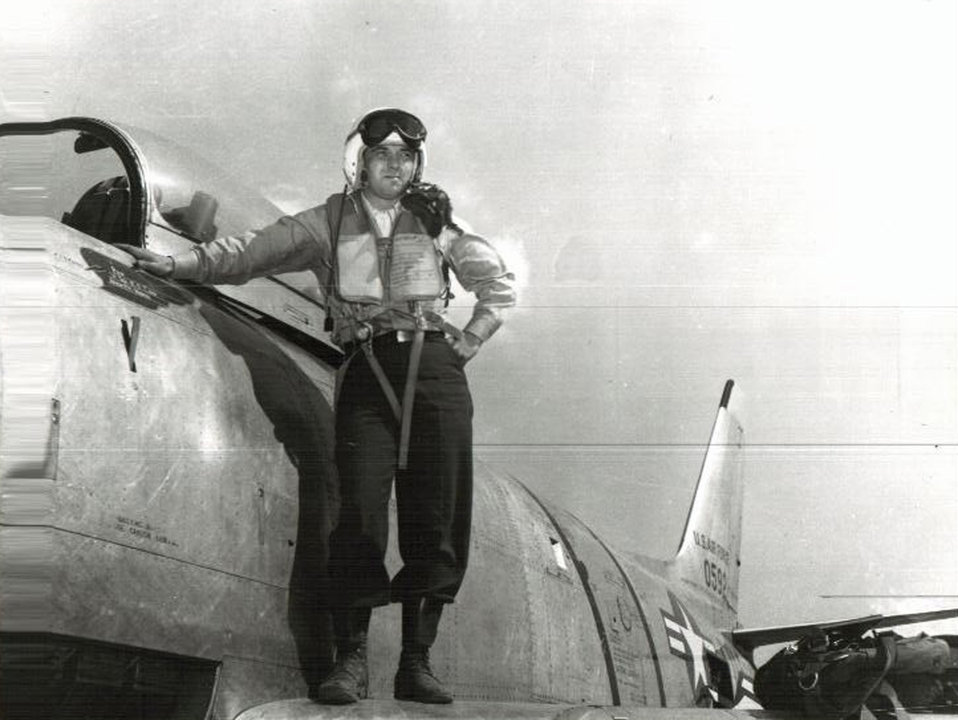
51st Fighter Wing Aces

Maj. William Wescott became the fifth ace of the wing on April 26, 1952. Major Wescott was assisgned to the 25th Fighter-Interceptor Squadron.